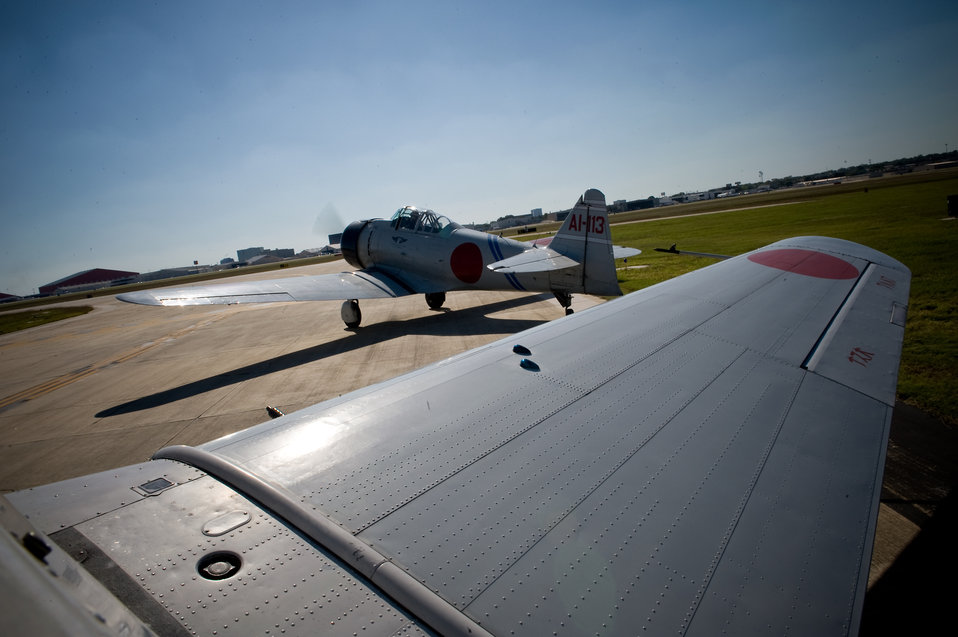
Warrior Flight